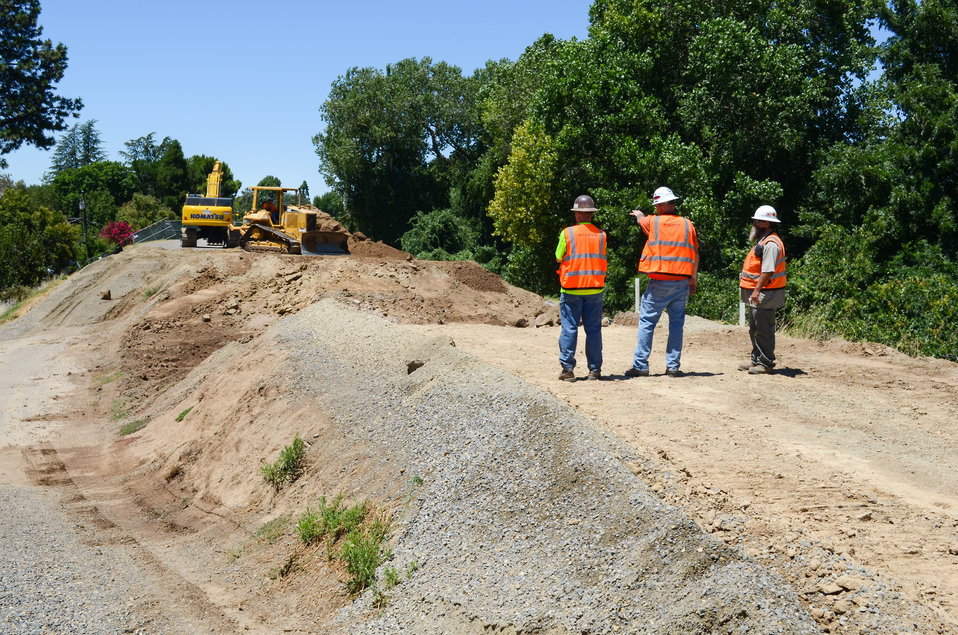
First day of levee construction near Sacramento’s River Park

Construction crews for the U.S. Army Corps of Engineers Sacramento District oversee the first day of levee construction July 16, 2013, near the River Park neighborhood of Sacramento, Calif. The project, near the City of Sacramento's Sump Station 10, will fill in a gap in the levee's existing cutoff wall where construction was complicated by the station's pipes, which run through the levee.